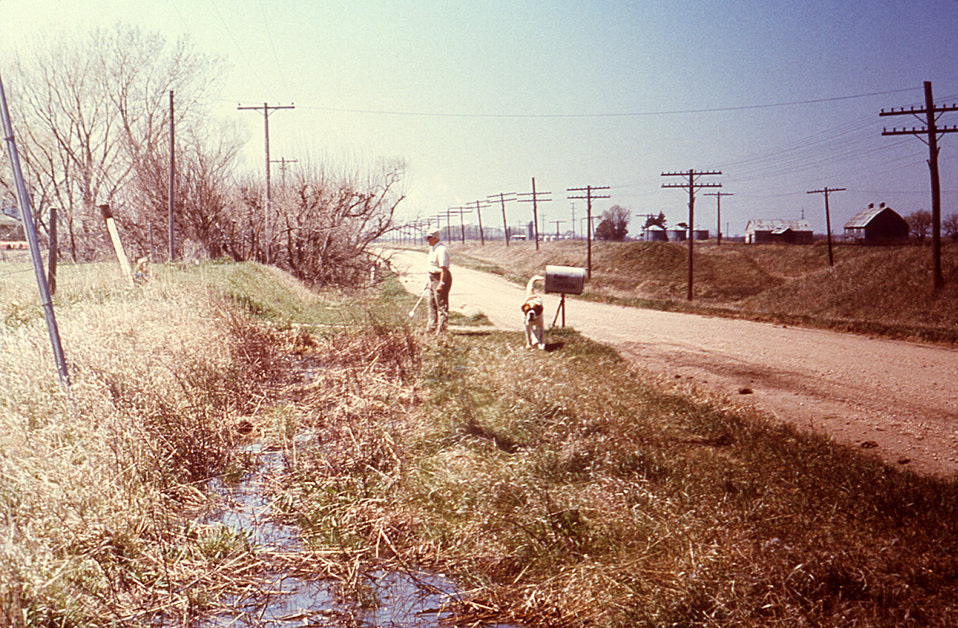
This 1974 photograph depicts what was a roadside ditch in Nebraska, choked with vegetation and debris, obstructing the free flow of water, thereby, becoming a breeding ground for mosquito populations.